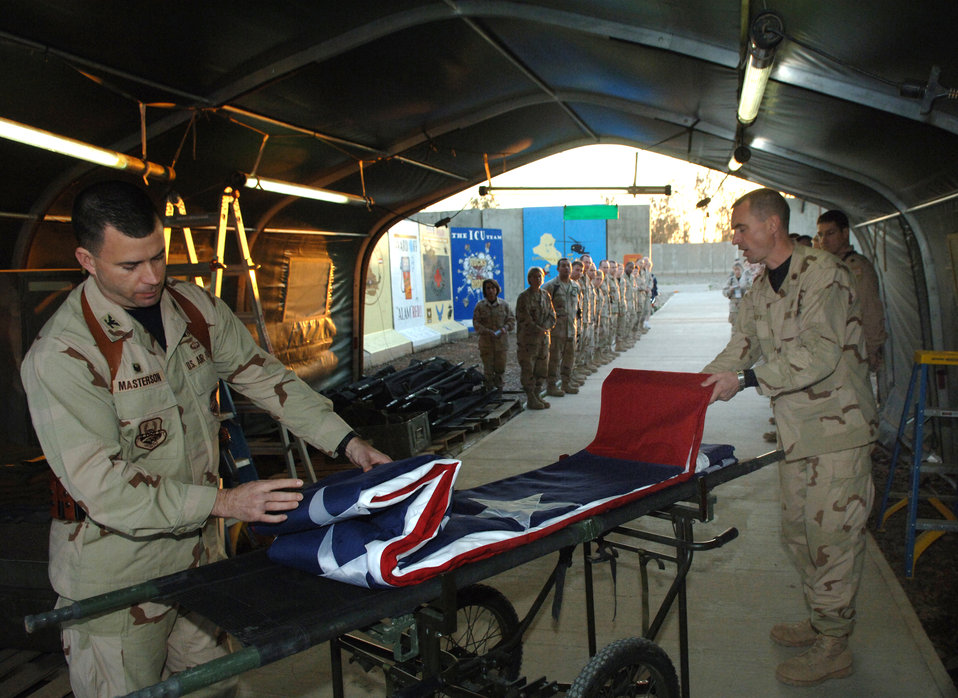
Hero's Highway begins in Iraq

Col. Brian Masterson and Capt. Leslie McClain unfold an American flag at the Hero's Highway Ceremony Jan. 22 at Balad Air Base, Iraq. The flag is posted on the inner roof a tent so injured troops can look up and know they are in an American area when brought in on litters seeking medical treatment. The medical group raised injured troops' survival rate to 98 percent. Colonel Masterson is assigned to the 332nd Expeditionary Medical Group and Captain McClain is from the 332d Air Expeditionary Wing.